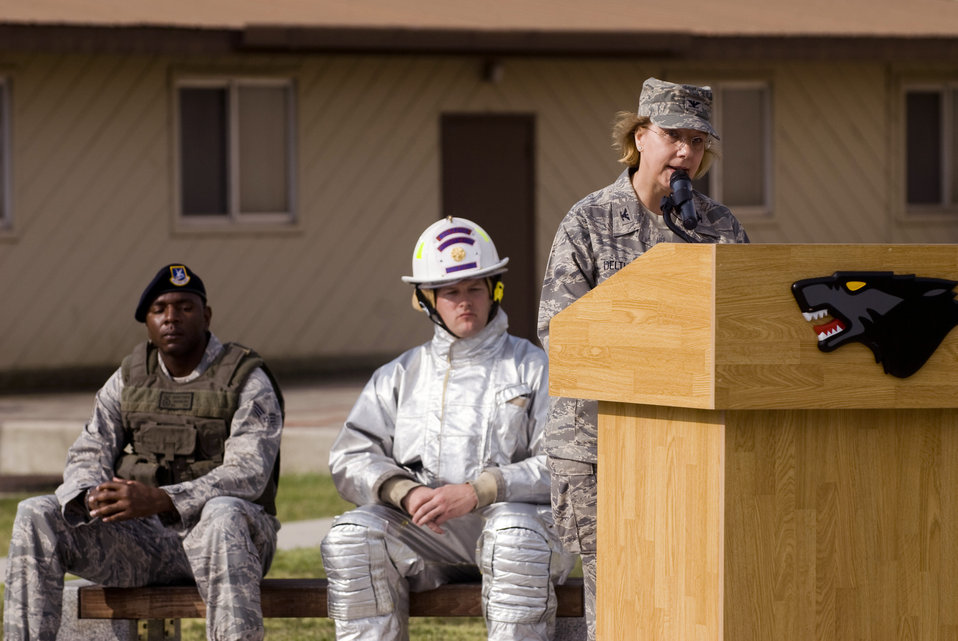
Rembering those who have fallen

Col. Janet Deltuva, 8th Medical Group commander, shares her experiences while stationed at the Pentagon Sept. 11, 2001, during the Patriot Day Ceremony Sept. 11, 2009, at Kunsan Air Base, South Korea. The September 11 Patriot Day Ceremony acknowledged the courageous firefighters, police officers, emergency responders and others who risked their lives to save the victims of the tragic events of Sept. 11, 2001. The ceremony also paid tribute to the men and women of the U.S. Armed Forces who have served in the military, whether deployed or at home station, since these events.